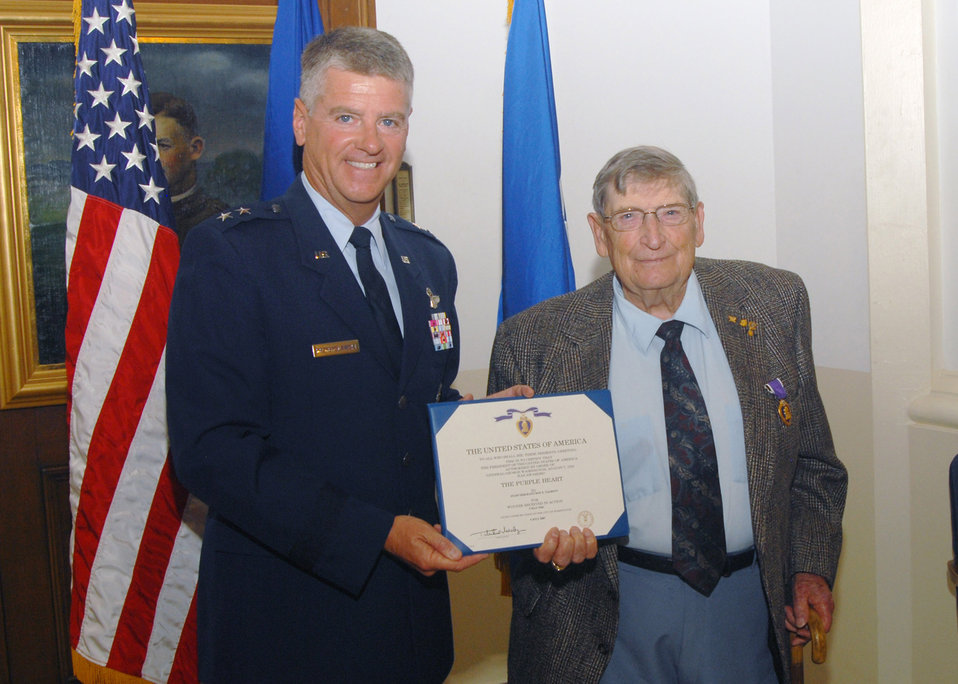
B-24 gunner receives Purple Heart for heroism in WW II

Maj. Gen. Anthony Przybyslawski stands with Roy E. Talbott after presenting him with a Purple Heart Aug. 21 at Randolph Air Force Base, Texas. Mr. Talbott served as a B-24 gunner with the 72nd Bomb Squadron of the 13th Air Force's 5th Bomb Group, and received the Purple Heart for injuries he received in an attack by Japanese fighter planes in the Pacific Theater during World War II. The general is the Air Force Personnel Center commander.